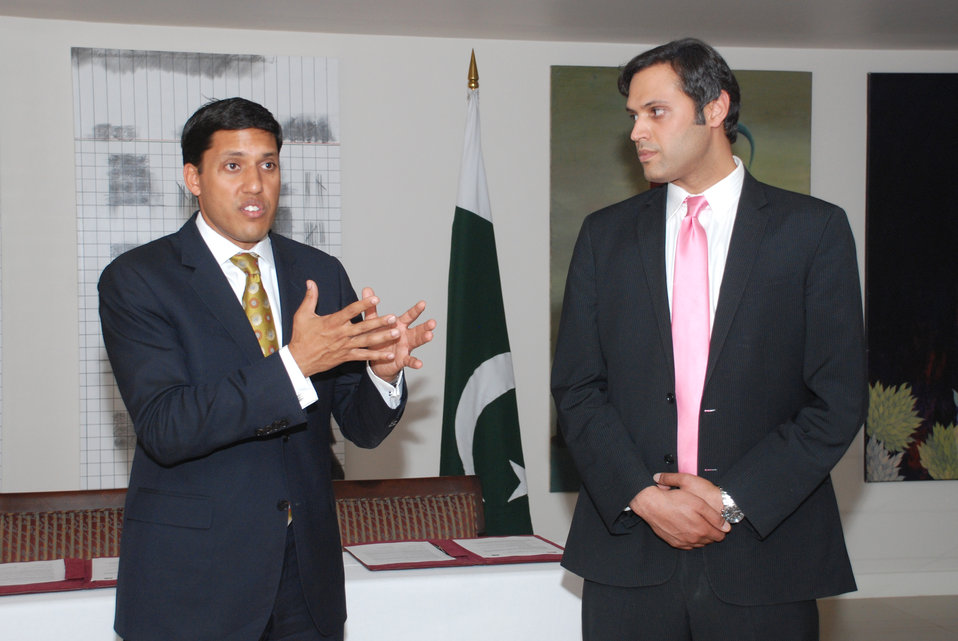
MoU Signing Ceremony between USAID and APF at Islamabad on April 18, 2012